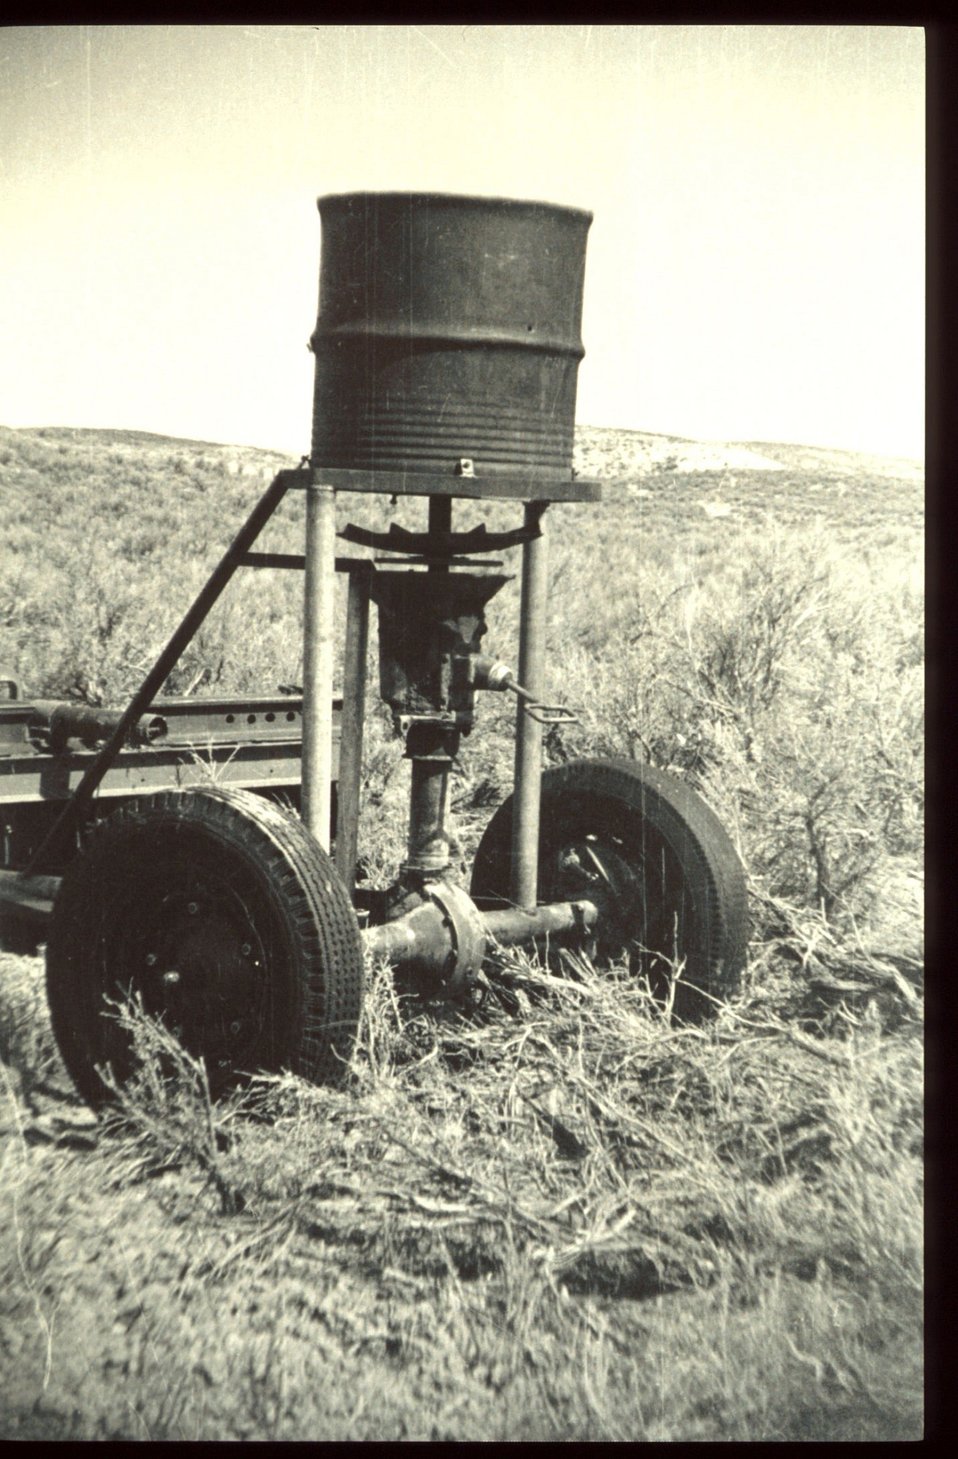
Range Restoration Project